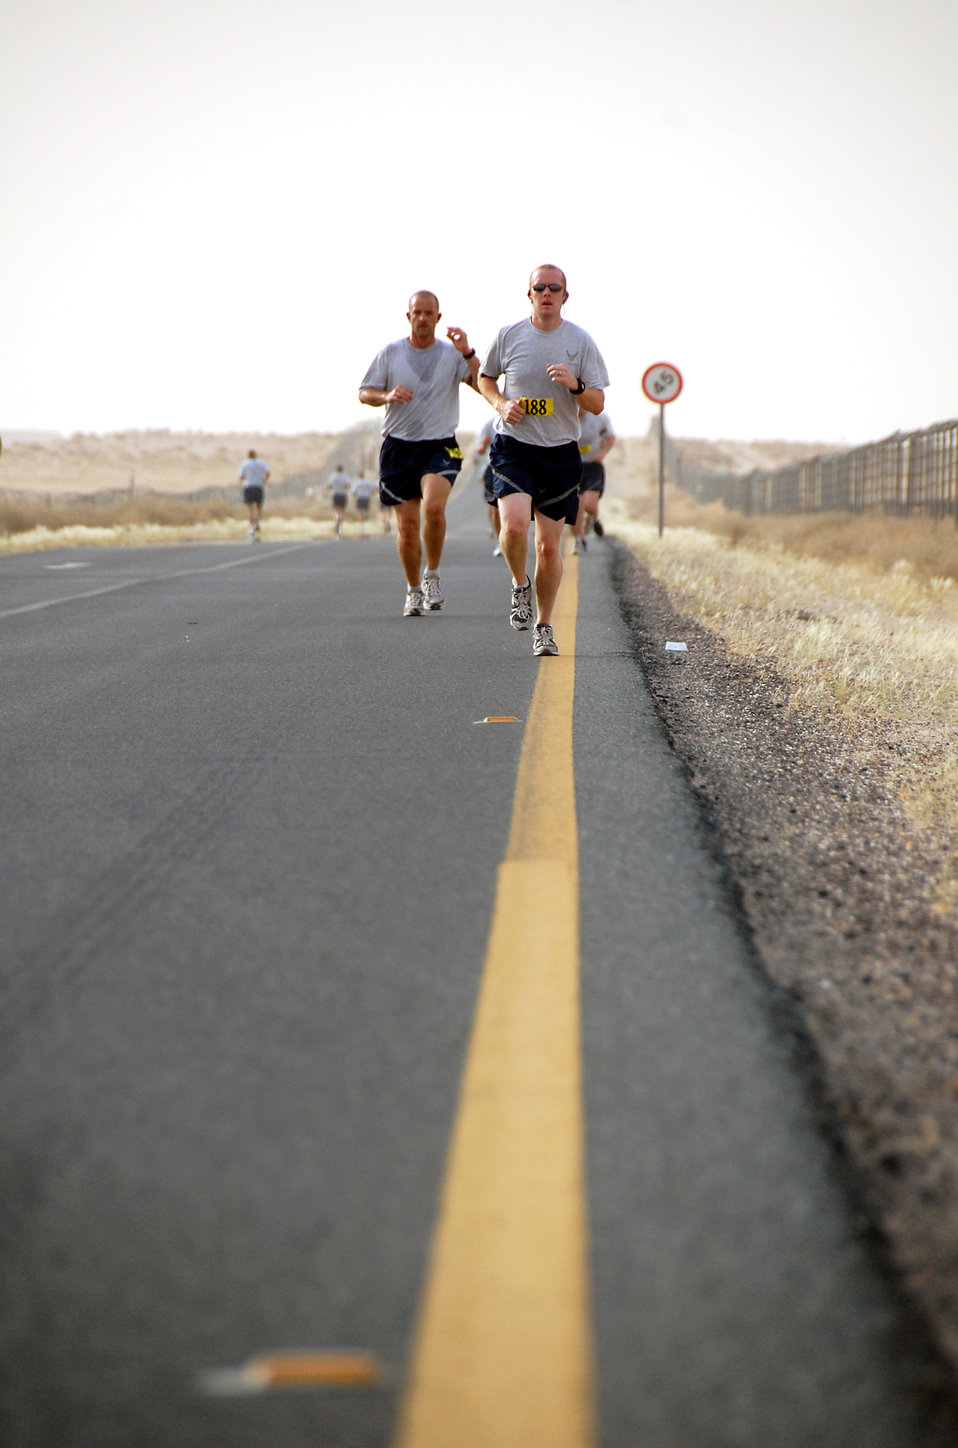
One step at a time

Capt. James Willliams (front) of the 737th Expeditionary Airlift Squadron participates in the Memorial Day 10K fun run May 31, 2010, at an air base in Southwest Asia. The 386th Force Support Squadron fitness center staff hosted the early morning run with the help of base volunteers.